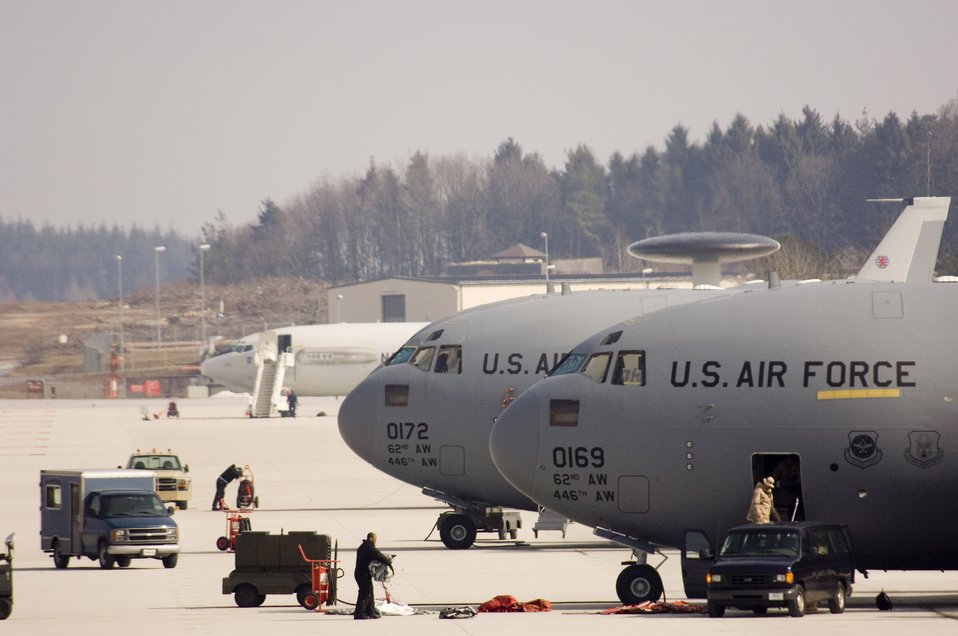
Airlift Gas-n-Go

A pair of C-17 Globemaster IIIs and an E-3 Sentry (AWACS) sit on the tarmac at Spangdahlem Air Base, Germany, Wednesday, March 22, 2006. The transports, from McChord Air Force Base, Wash., and the NATO airborne warning and control system will receive services from Spangdahlem's 726th Air Mobility Squadron.